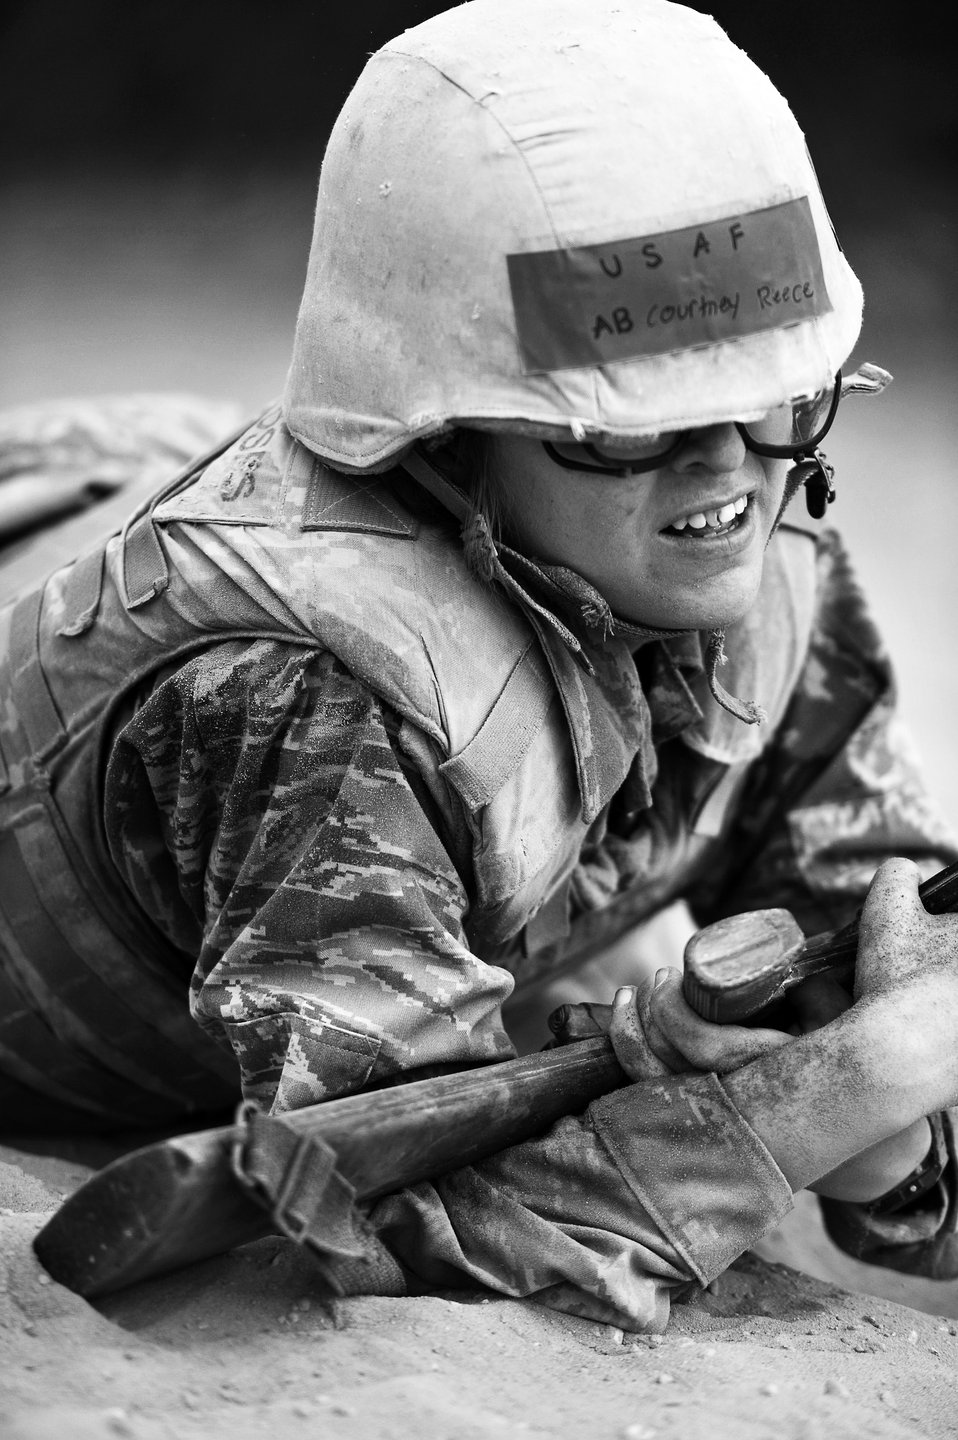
BEAST

Basic trainees go through their sixth week of Air Force basic military training at the Basic Expeditionary Airman Skills Training on May 25, 2011, at Lackland Air Force Base, Texas.